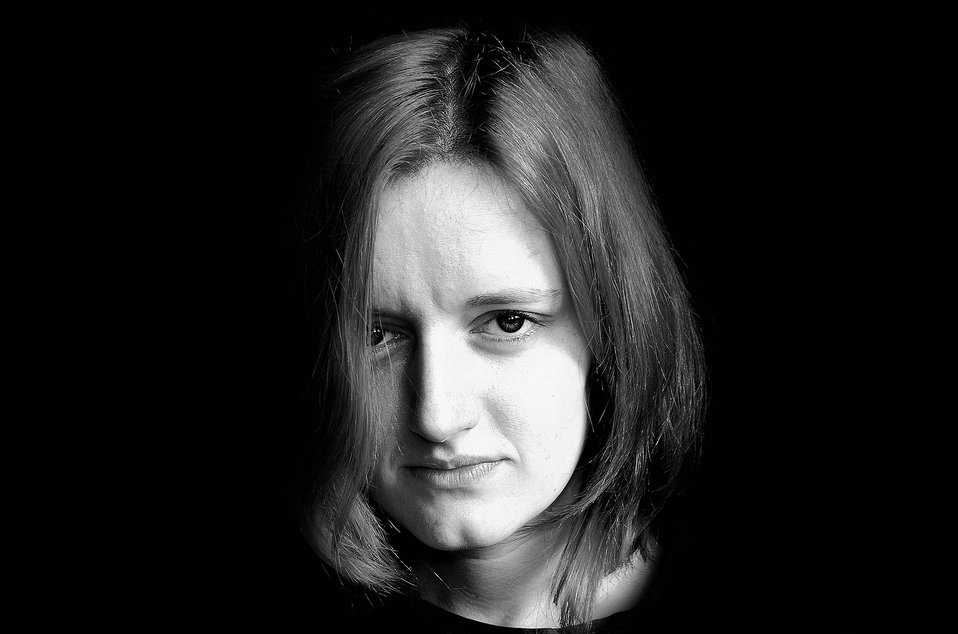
Woman - black and white.